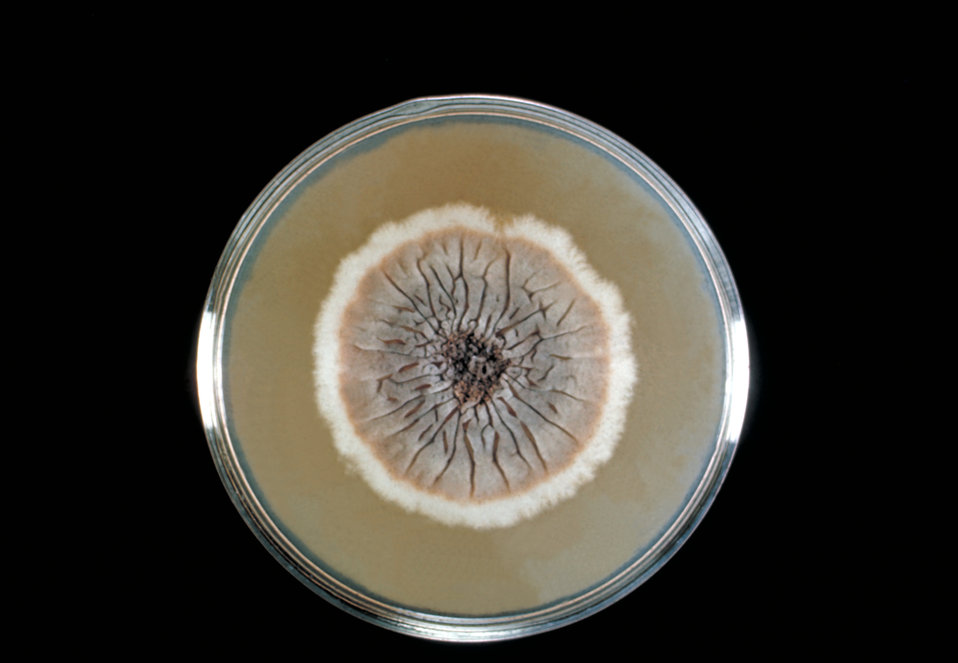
This Sabouraud's dextrose agar plate culture is growing the fungus Sporothrix schenckii.